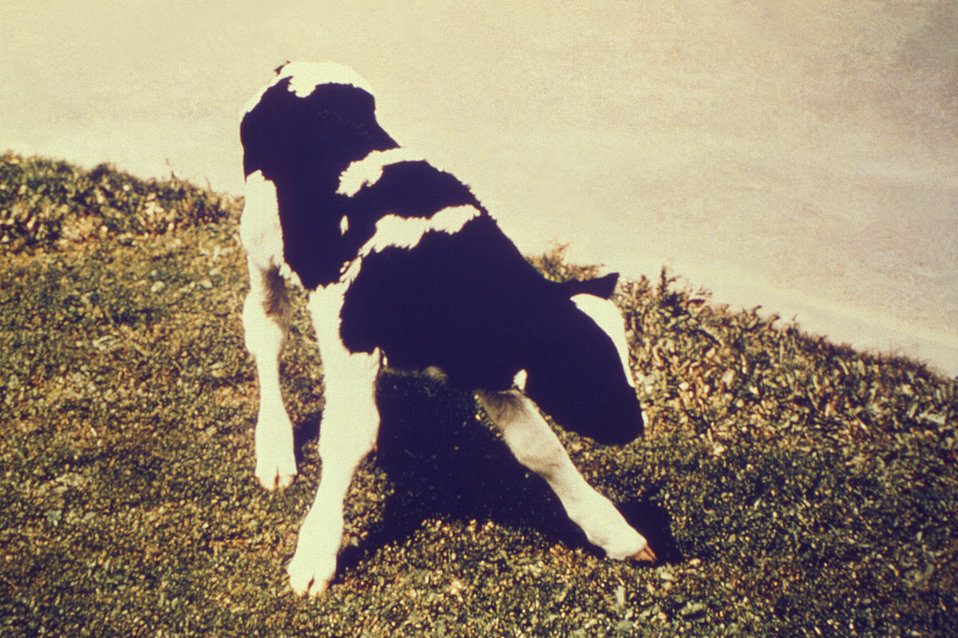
From the 'Illustrated Manual for the Recognition and Diagnosis of Certain Animal Diseases', published in 1982, by the Mexico-United States Commission for the Prevention of Foot and Mouth Disease, this photograph, depicts a calf displaying a stance indicative of cerebellar ataxia, due to a bovine viral diarrhea (BVD) infection it acquired during its in-utero gestation period. 'The congenital defects in calves consist of cerebellar hypoplasia, cataracts, retinal degeneration, and optic nerve hypoplasia and neuritis.'